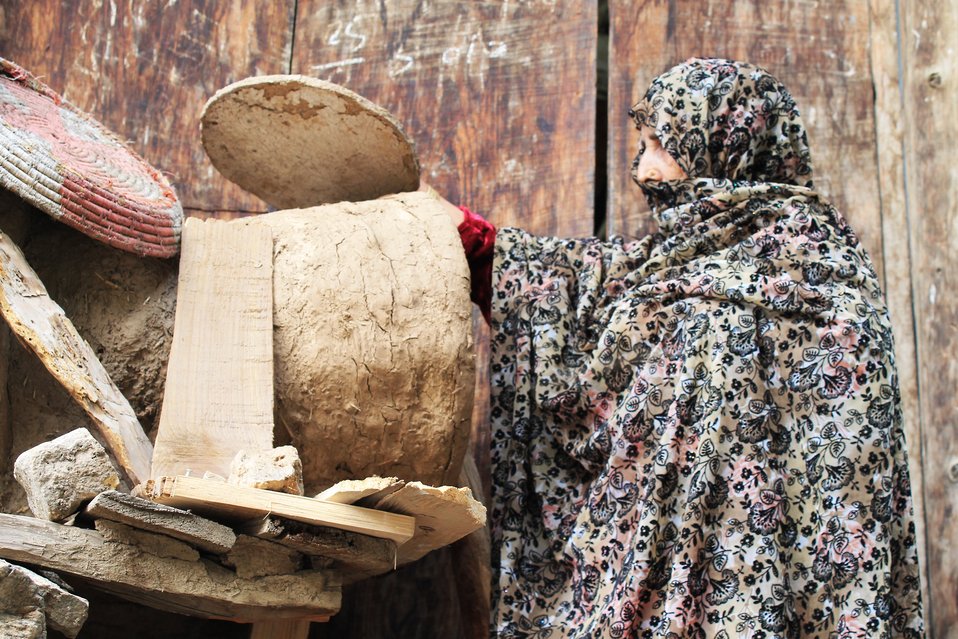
Honey Value Chain Development Initiative under the USAID's Entrepreneurs Project

Swat, October 17, 2012: USAID through its Entrepreneurs Project is making concerted efforts to increase economic activities and opportunities for 1200 female beekeepers in the domestic market.